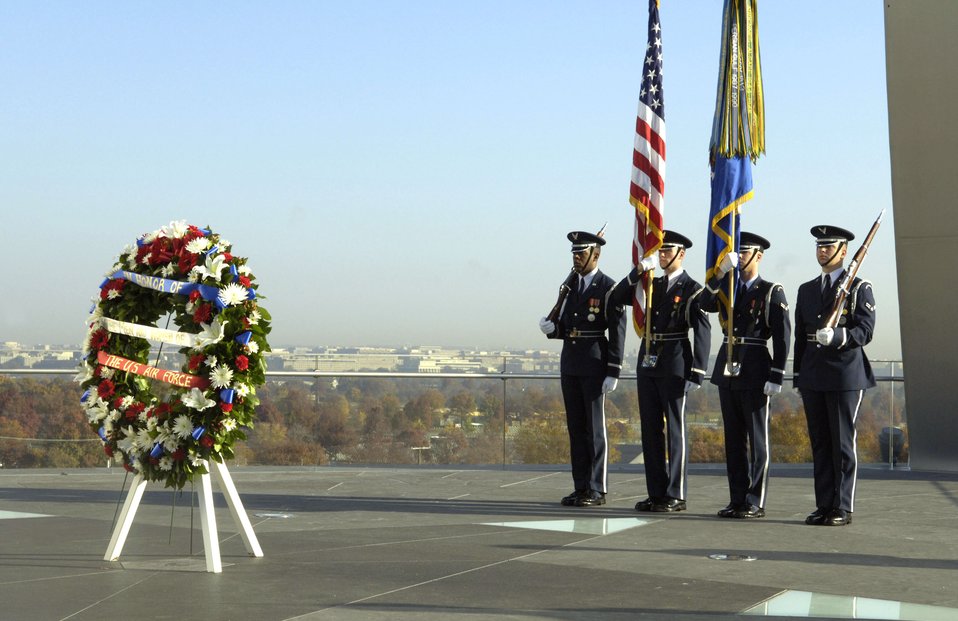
Air Force Honor Guard

Color Guard members from Bolling Air Force Base stand at attention at the conclusion of a wreath presentation by Doolittle's Raiders at the Air Force Memorial on Nov. 10, in Arlington, Va. The wreath was placed at the base of the Air Force Memorial in rememberance of fallen Air Force members from the past and present.